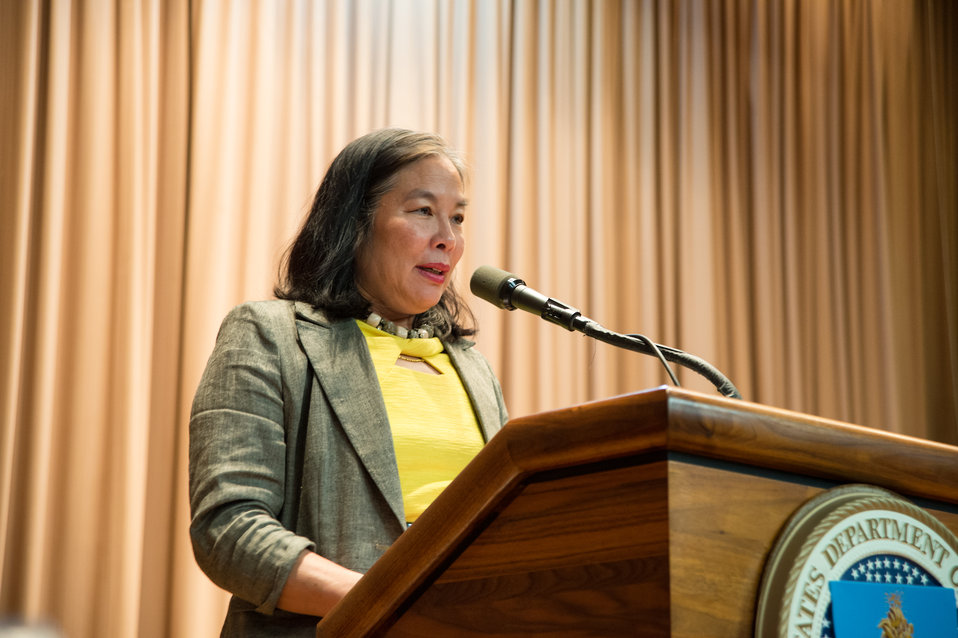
Dr. Vivian Chen, USDA White House Initiative for Asian American and Pacific Islander Advisor introduces and moderated a panel discussion on civil rights and leadership at the U.S. Department of Agriculture (USDA) in Washington, D.C. on Thursday, May 22, 2014. The theme of the event was, “Diverse Leadership and Expanding Opportunity: Am Imperative for America.”